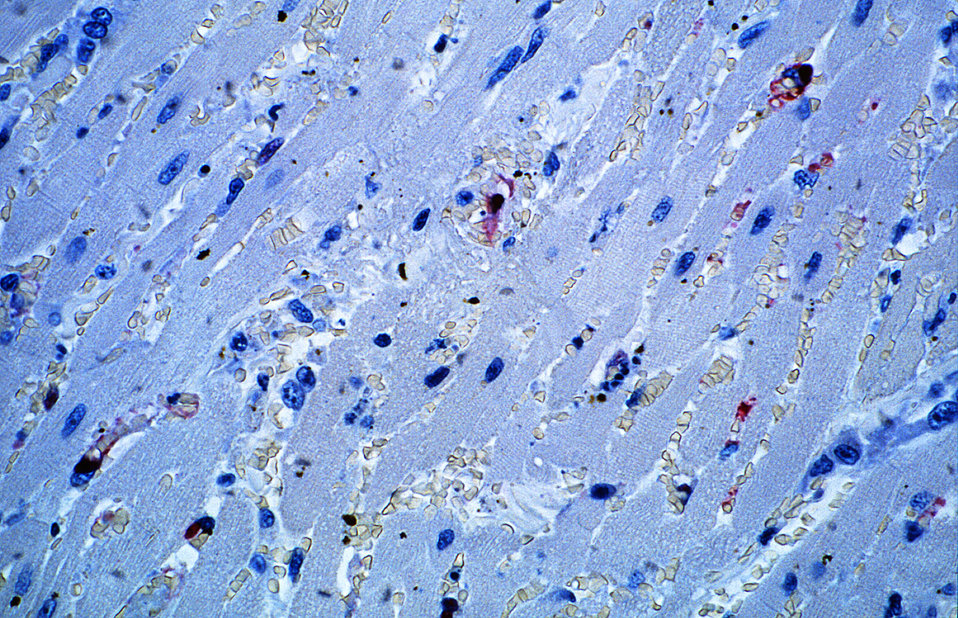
Using immunohistochemical (IHC) technique, this photomicrograph of a canine cardiac (heart) tissue specimen, revealed some of the cytoarchitectural histopathologic changes associated with a Nipah virus infection.